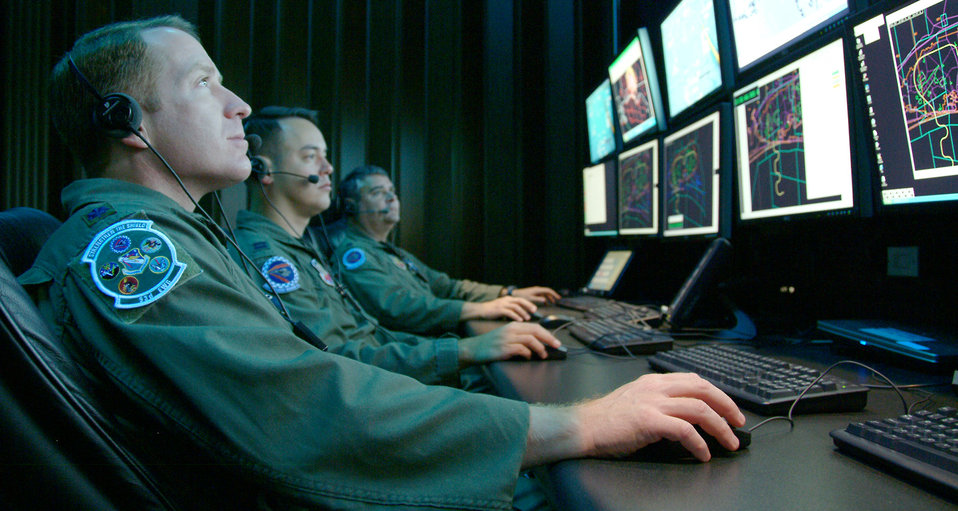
Cyber Command officials define unit's scope

Lt. Col. Tim Sands (from left), Capt. Jon Smith and Lt. Col. John Arnold monitor a simulated test April 16 in the Central Control Facility at Eglin Air Force Base, Fla. They use the Central Control Facility to oversee electronic warfare mission data flight testing. Portions of their missions may expand under the new Air Force Cyber Command. Colonel Sands is the 53th Electronic Warfare Group AFCYBER Transition Team Chief, Captain Smith is the 36th Electronic Warfare Squadron Suppression of Enemy Air Defensestest director, and Colonel Arnold is the 36th Electronic Warfare Squadron commander.